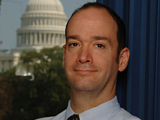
Miguel Gomez 160x120